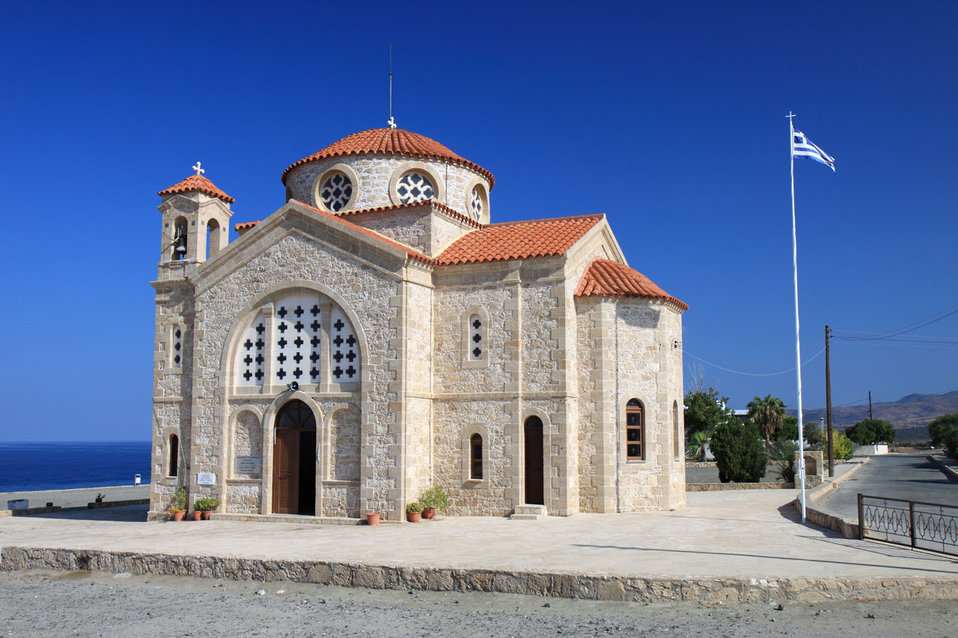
Greek church

Church in agios georgios - cyprus.